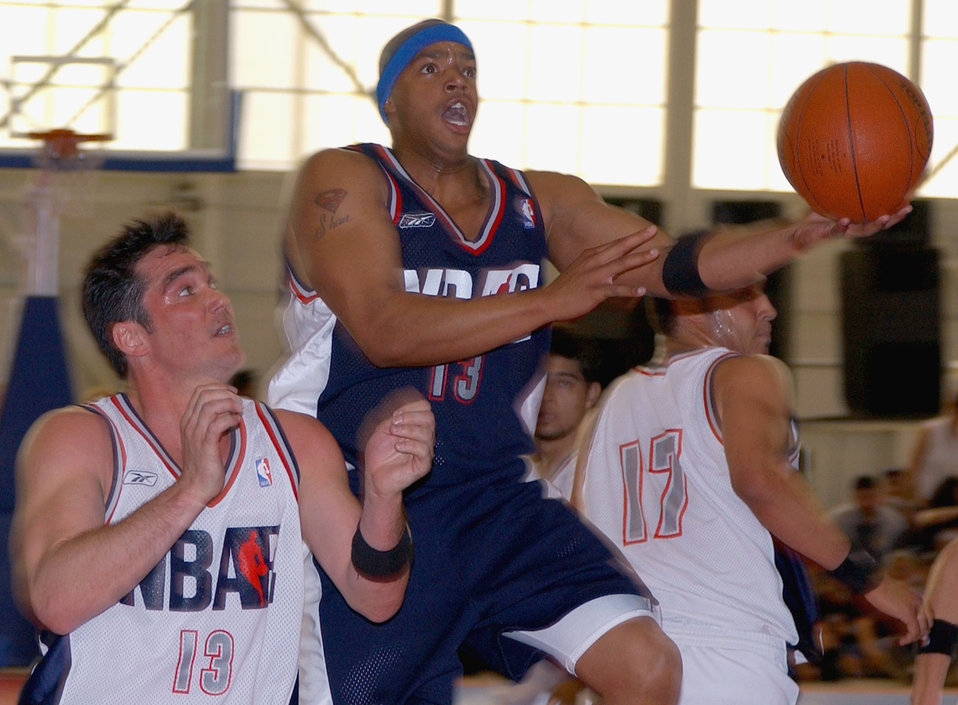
Game time

EDWARDS AIR FORCE BASE, Calif. -- Donald Faison (blue) goes up against Dean Cain (white) during the second annual National Basketball Association Entertainment League game May 10.